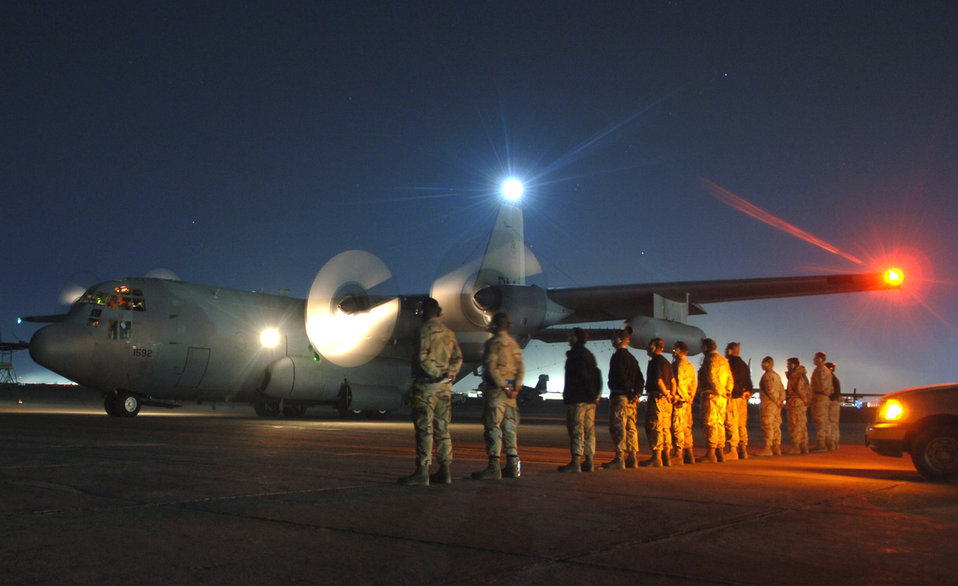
Combat sortie

BAGRAM AIR BASE, Afghanistan -- Maintainers watch as an EC-130H Compass Call prepares for takeoff on a combat sortie. Since November 2004, EC-130s have supported more that 1,500 air-support requests from ground forces participating in Operation Enduring Freedom. The aircraft and Airmen who support the compass call mission are deployed here from Davis-Monthan Air Force Base, Ariz.